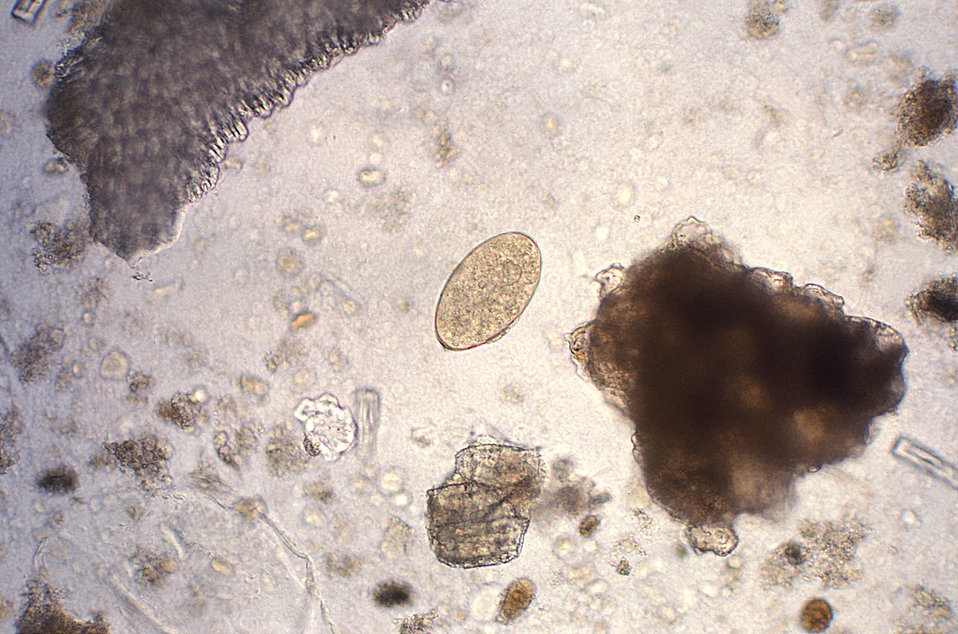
Magnified 128X, this photomicrograph revealed the presence of a trematode, Fasciola hepatica, or 'sheep liver fluke', egg, which is described as broadly ellipsoidal, operculated, and measure 130�m to 150�m long by 60�m to 90�m wide. The eggs are unembryonated when passed in feces. The eggs of F. hepatica can be difficult to distinguish from Fasciolopsis spp., although the abopercular end of the former often has a roughened or irregular area.